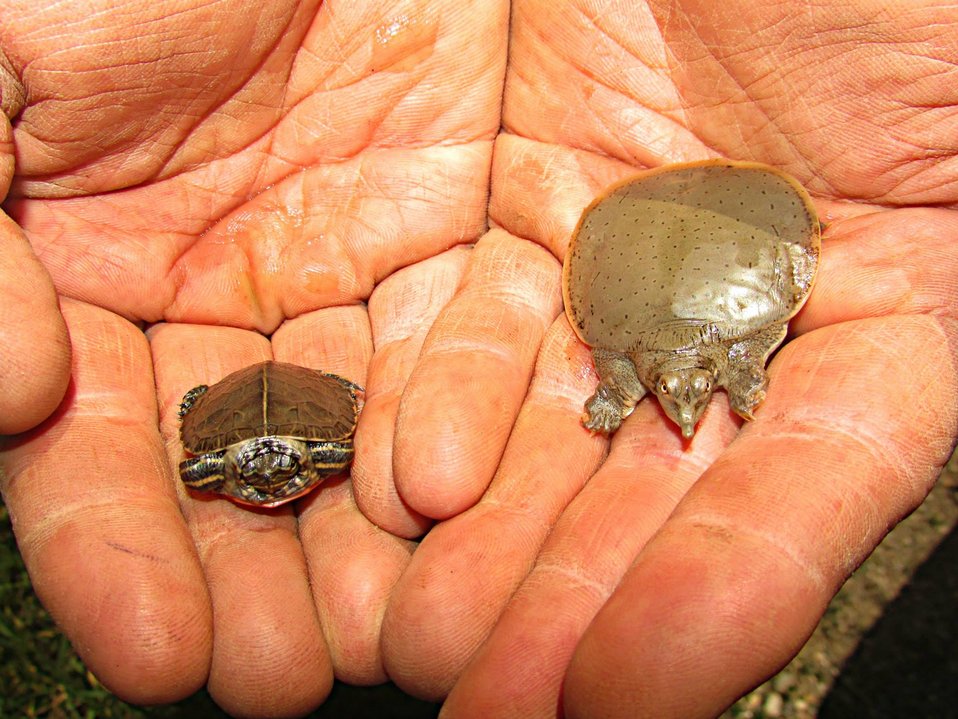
Baby Turtles

Happy World Turtle Day!

This painted turtle and softshell turtle were incredibly popular during school tours this year. Both were re-released back into the wild this morning!